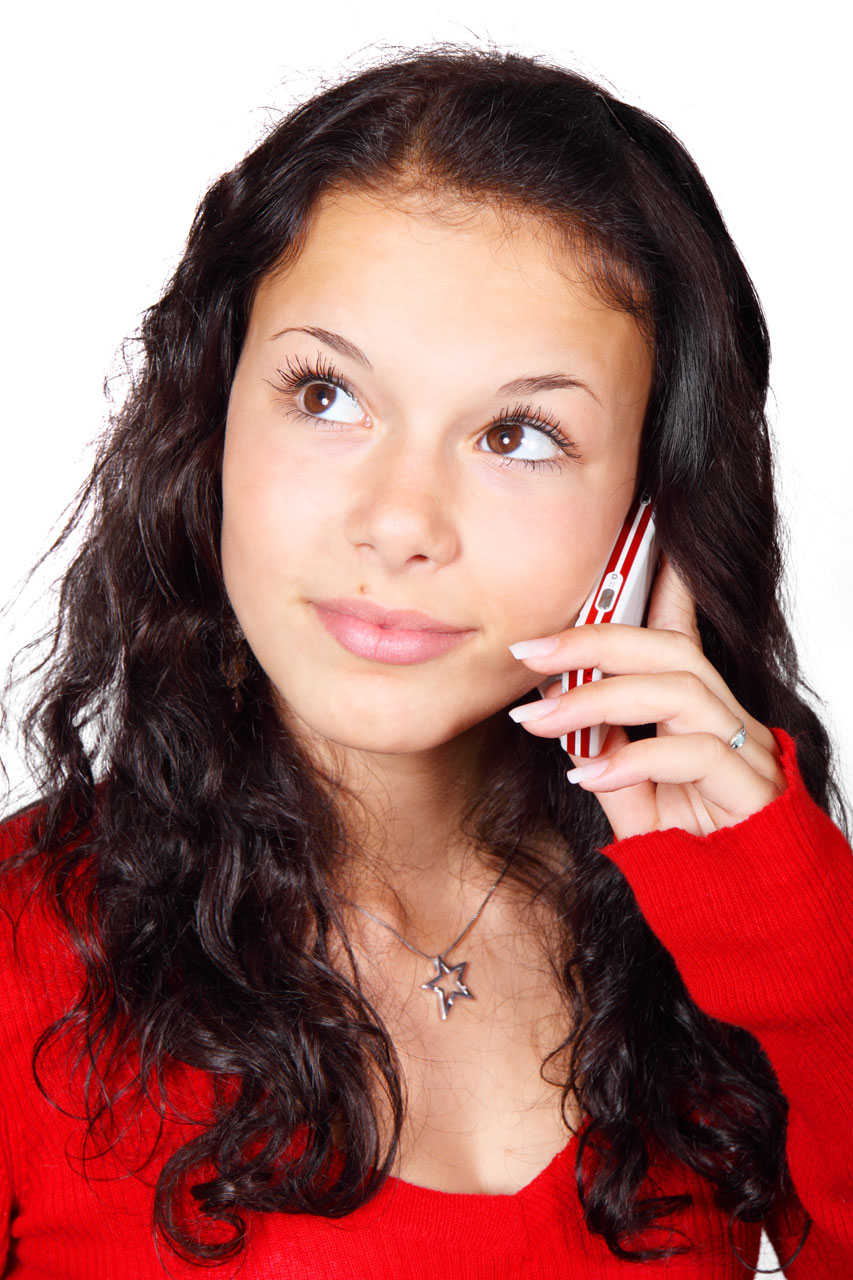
Woman and mobile phone

Young woman on her cellphone.